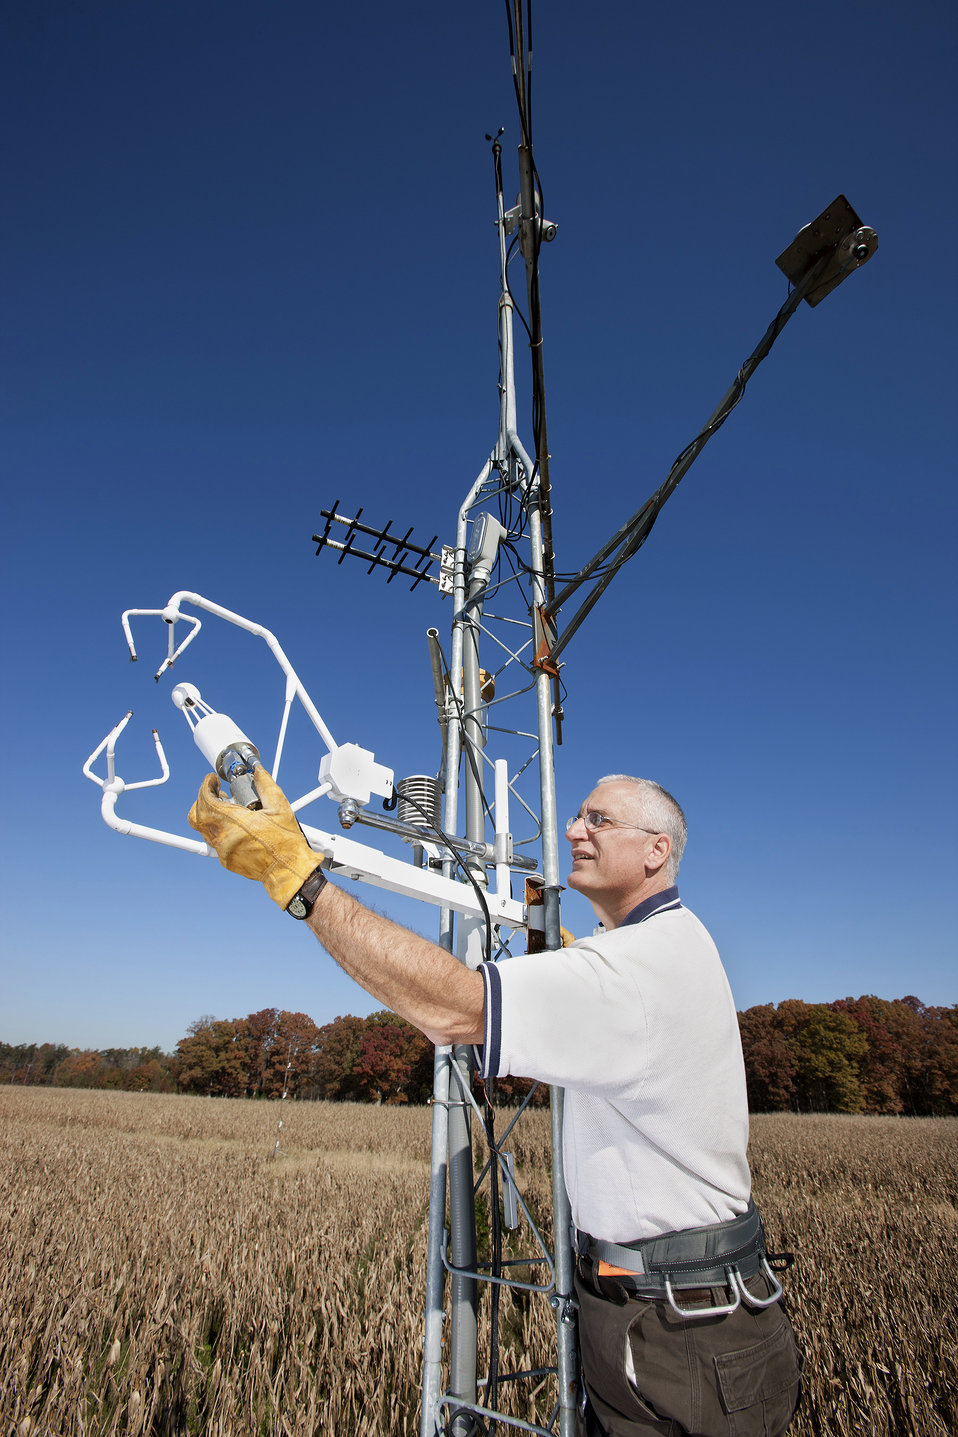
U.S. Department of Agriculture (USDA) Agriculture Research Service (ARS) hydrologist Bill Kustas checks the position of a water vapor/CO2 sensor on a micrometeorological tower At the OPE3 (Optimizing Production Inputs and Environmental Enhancement) study area in Beltsville, MD on Mar. 20, 2003. In combination with the adjacent sonic anemometer, which measures horizontal and vertical wind, these instruments measure the turbulent exchange of water, energy, and CO2 between the soil-plant system and the lower atmosphere and are used to evaluate the ALEXI computer model over different landscapes.